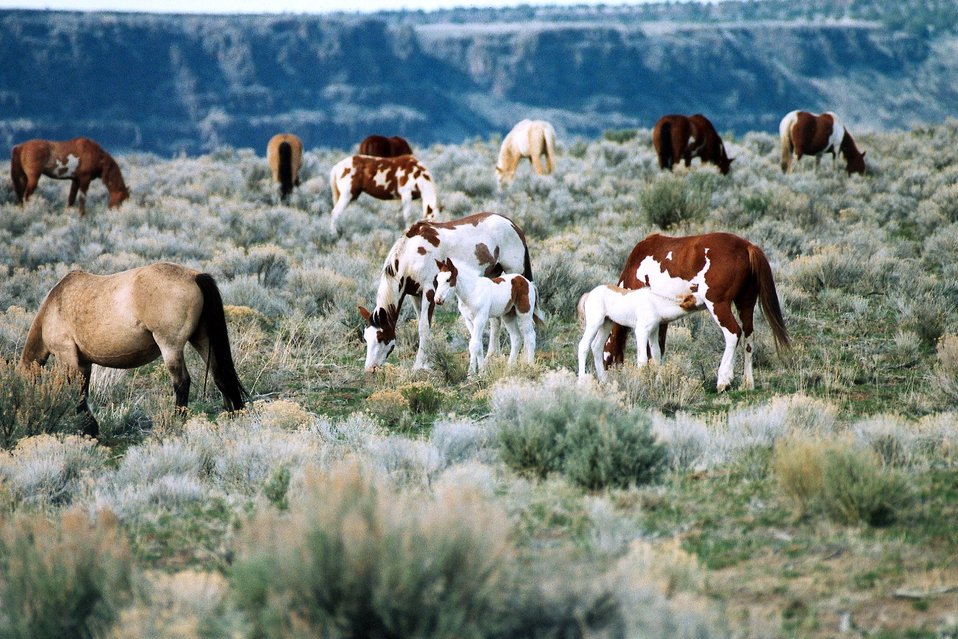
Medium shot of grazing mares and two foals.